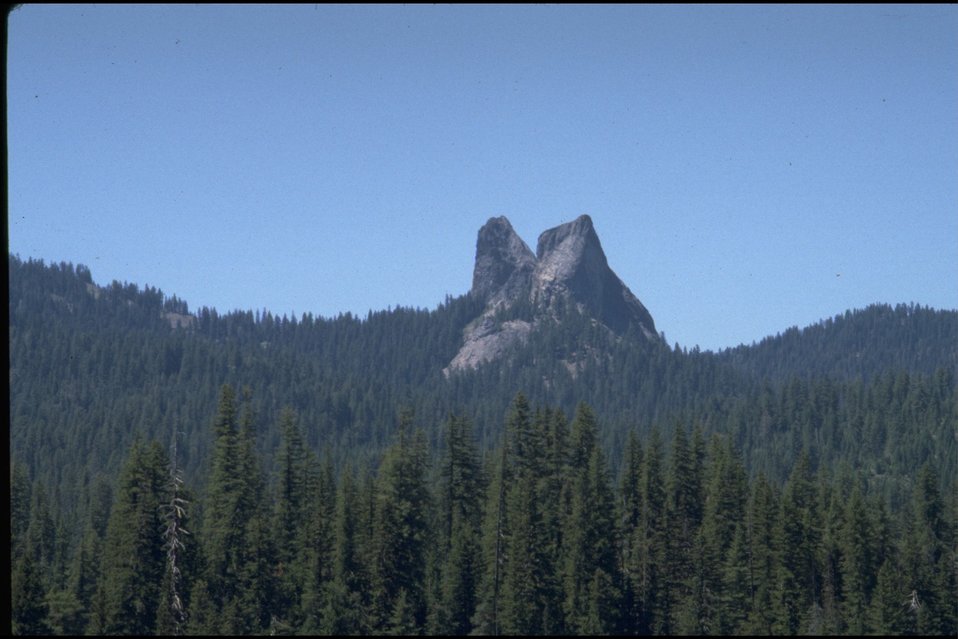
Rabbit Ears - Rogue National Forest. Upper Rogue Drainage, near small town of Union Creek.